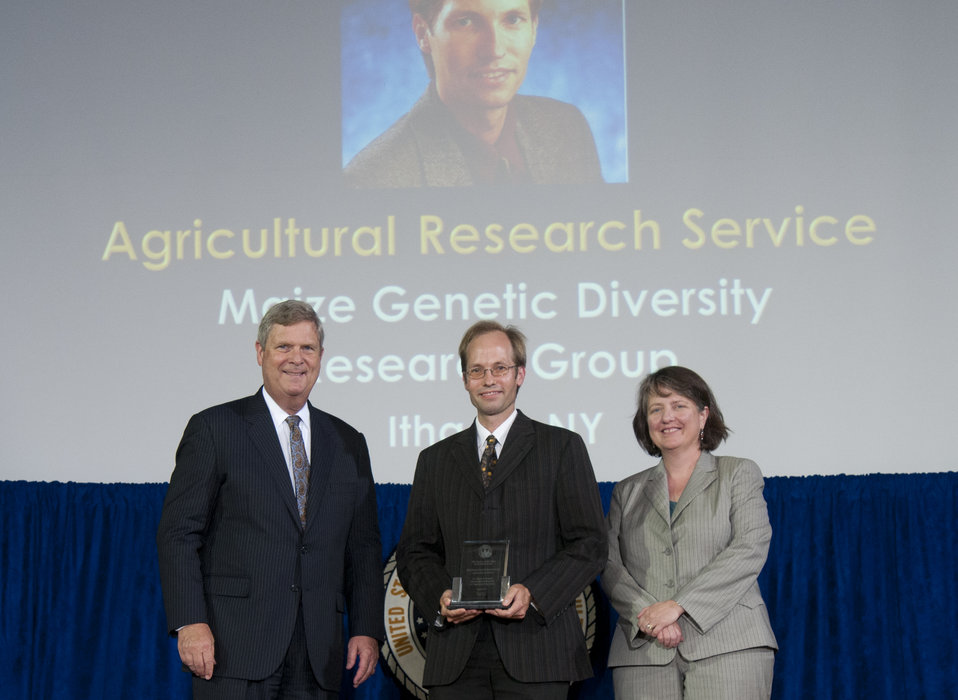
Agriculture Secretary Tom Vilsack and Agriculture Deputy Secretary Kathleen Merrigan present the Secretary’s Honor Award to Maize Genetic Diversity Research Agricultural Research Service (ARS) group leader Edward S. Buckler at the U.S. Department of Agriculture (USDA) 64th Annual Honor Awards Ceremony in Washington, D.C. on Wednesday, Sept. 12, 2012. The Maize Genetic Diversity Research Group pioneered research on the development and application of innovative genetic and genomics-based tools to exploit genetic diversity in corn to improve corn yield in the U.S. and developing countries.